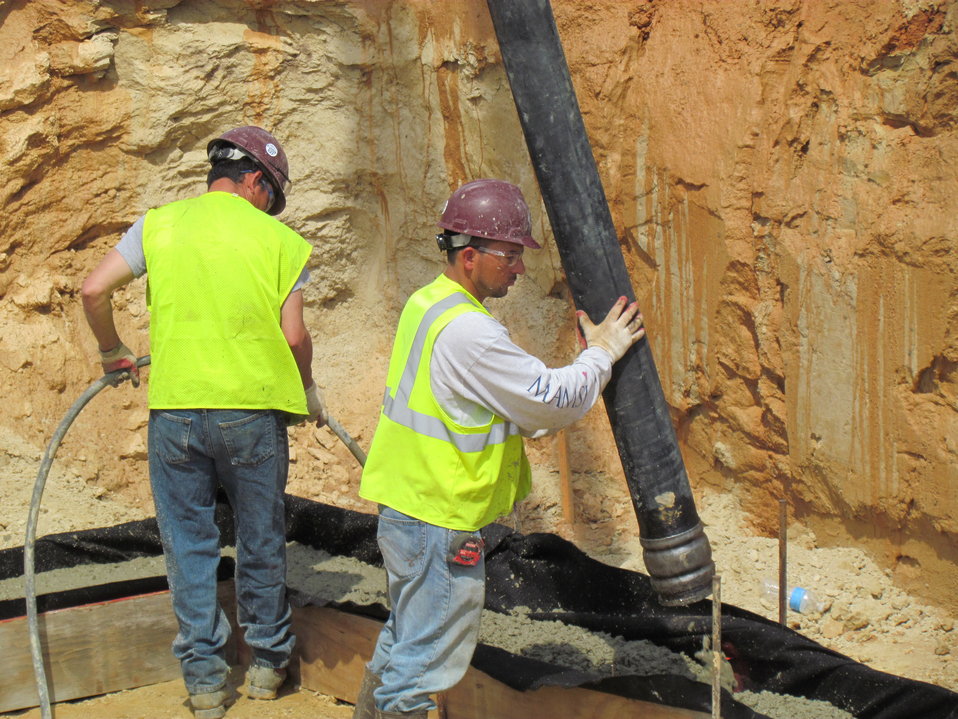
Net-Zero Energy Residential Test Facility - Construction photo showing workmen pouring concrete into foundations forms using concrete pumper truck.